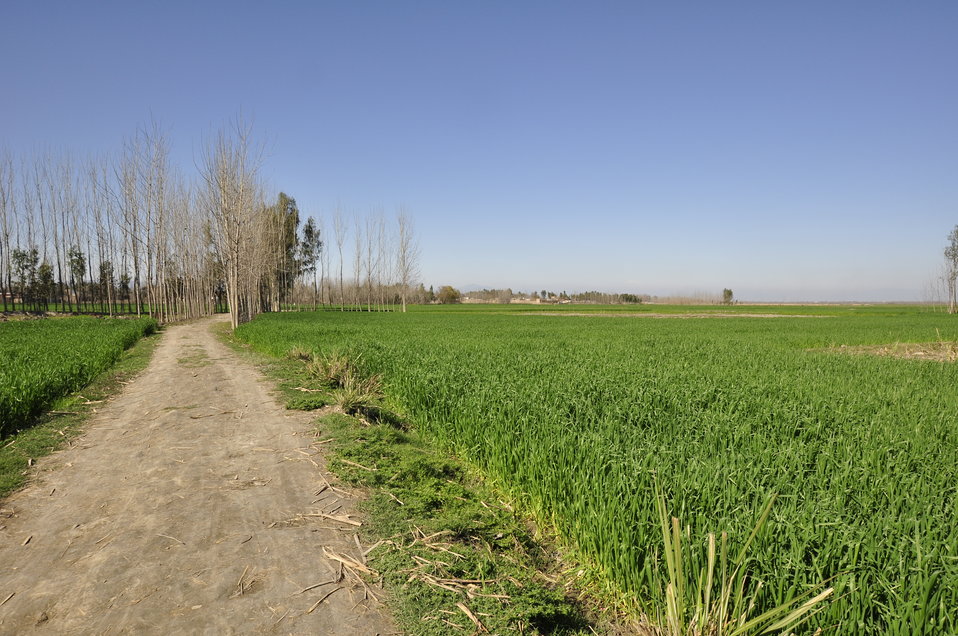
2011 March: USAID's Agricultural Recovery Program in 22 districts of Khyber Pakhtunkhwa, Punjab and Balochistan is an excellent example of the impact US development assistance can have. We have helped more than 500,000 farmers salvage the winter planting season and livestock after the floods. As a result, wheat farmers have nearly doubled their harvests. More than 5 million people have benefited. These photos show progress of the USAID Agricultural Recovery Project in Khyber Pakhtunkhwa.